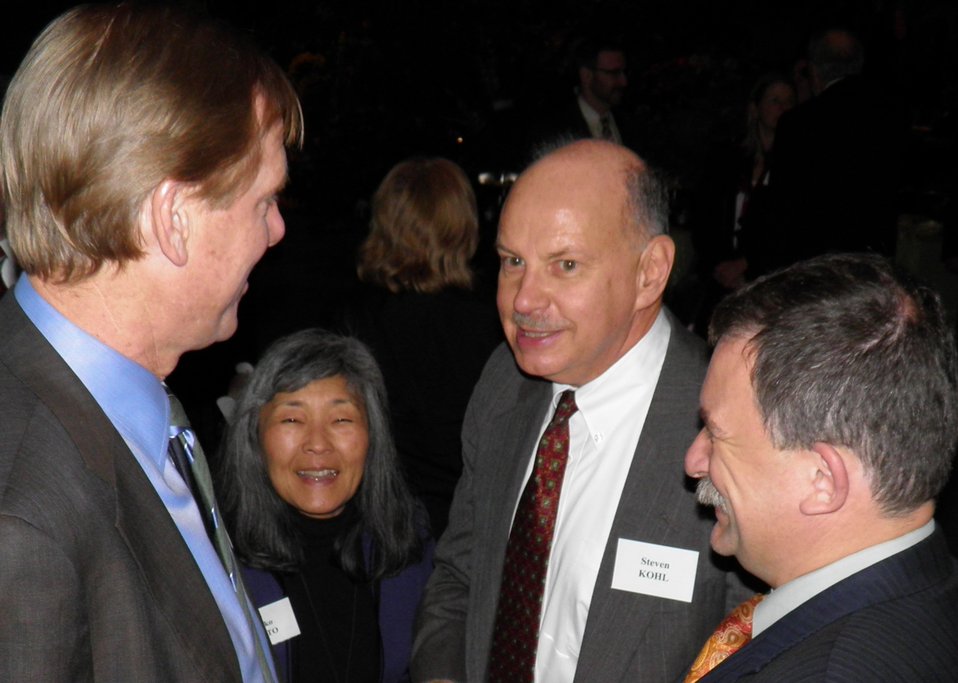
Shafroth Saito Kohl Stepanitsky

U.S. Department of Interior officials meet with officials from the Russian Ministry of Environment and Natural Resources.